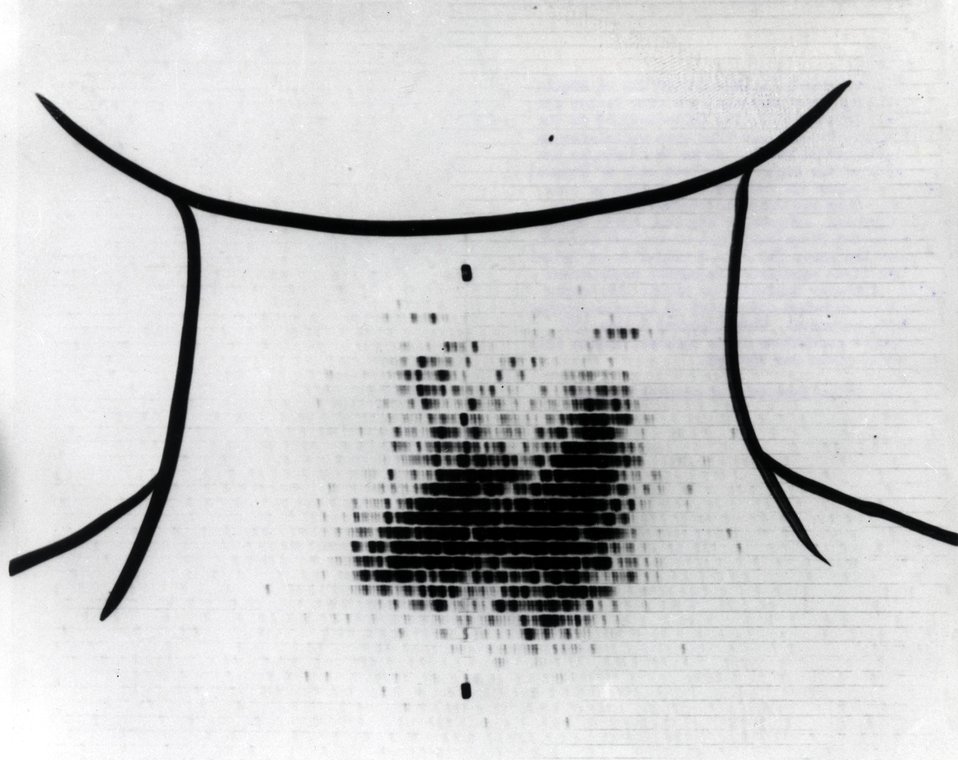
DIAGNOSTIC USE OF IODINE 130...Comparisons of scans made with Iodine 131 (AEC-66-7783) and Iodine 130 (AEC-66-7784) in the same patient, demonstrate that both radioisotopes can provide useful scans. c. 1966